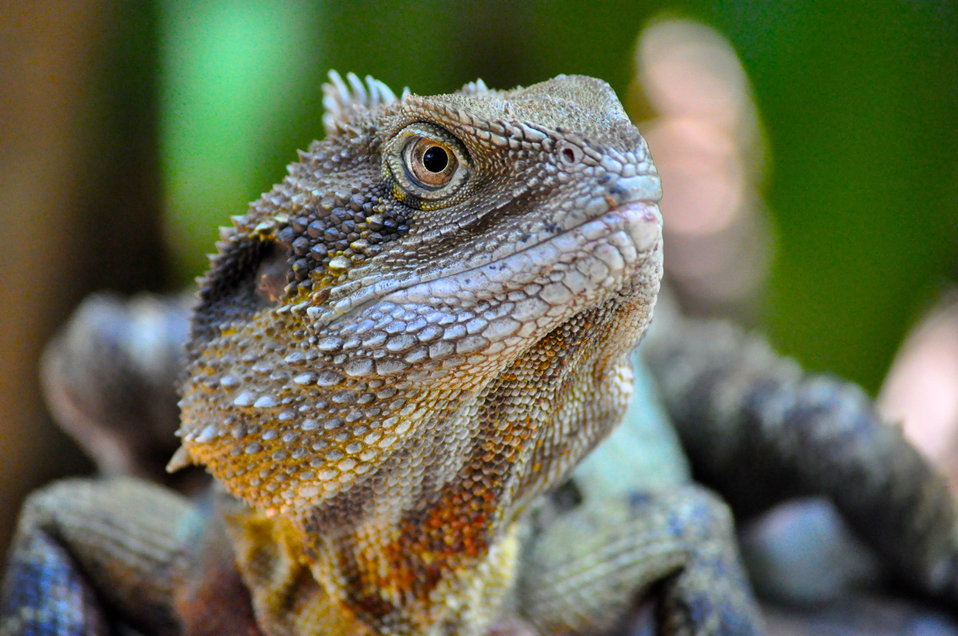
Lizard up close

Eastern water dragon up close.